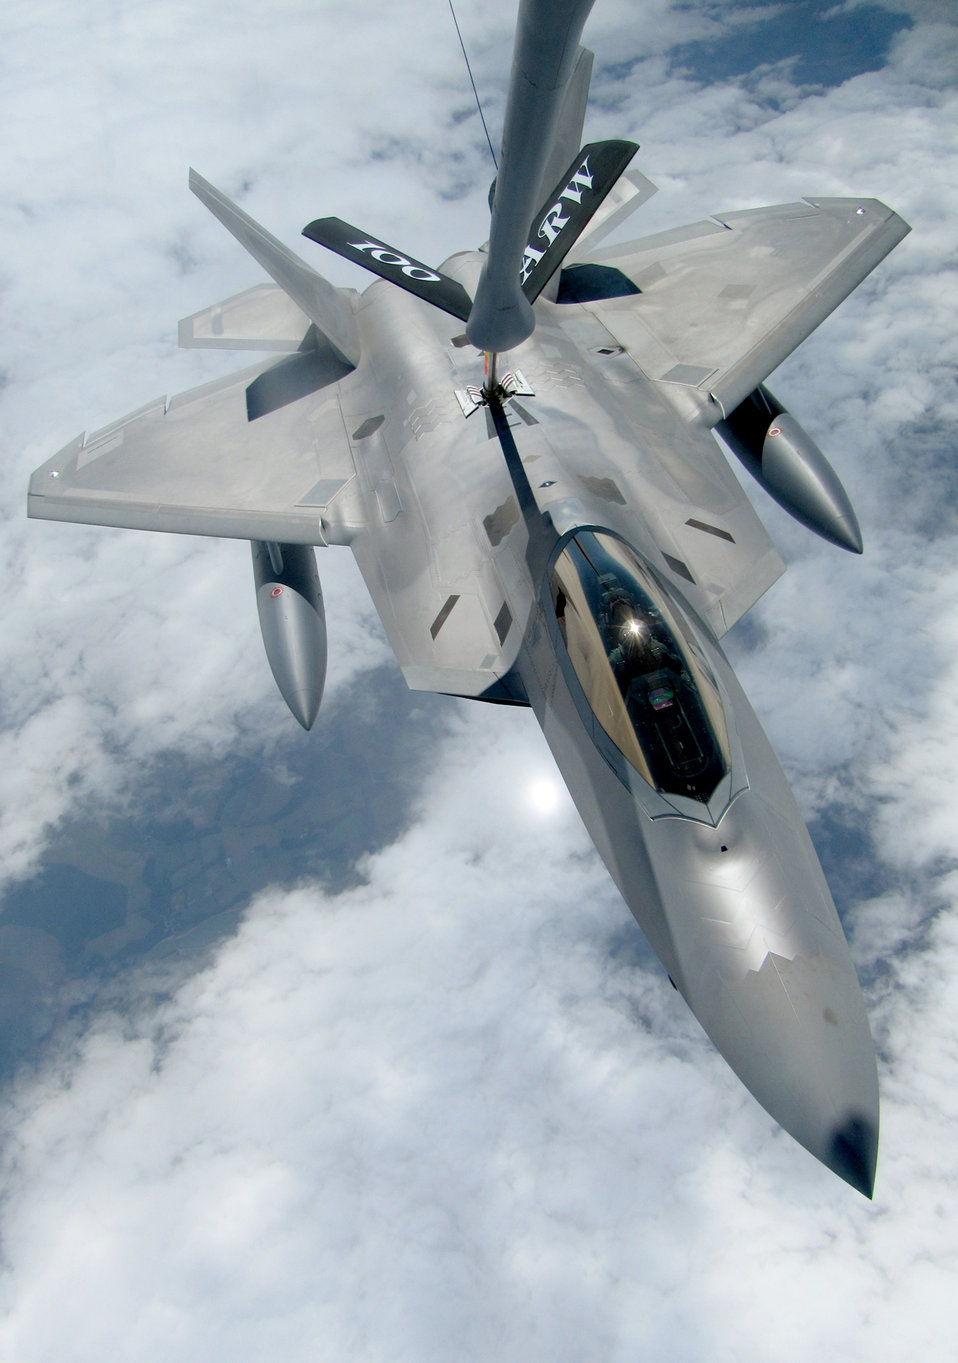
Coronet

An F-22 Raptor from Elmendorf Air Force Base, Alaska, takes gas from a KC-135 Stratotanker July 27, 2010. By flying with a tanker, the fighter could routinely fill its fuel tanks to ensure it had enough fuel to reach a safe base in the event it had to land. The tanker is assigned to the 100th Air Refueling Wing at Royal Air Force Mildenhall, England.